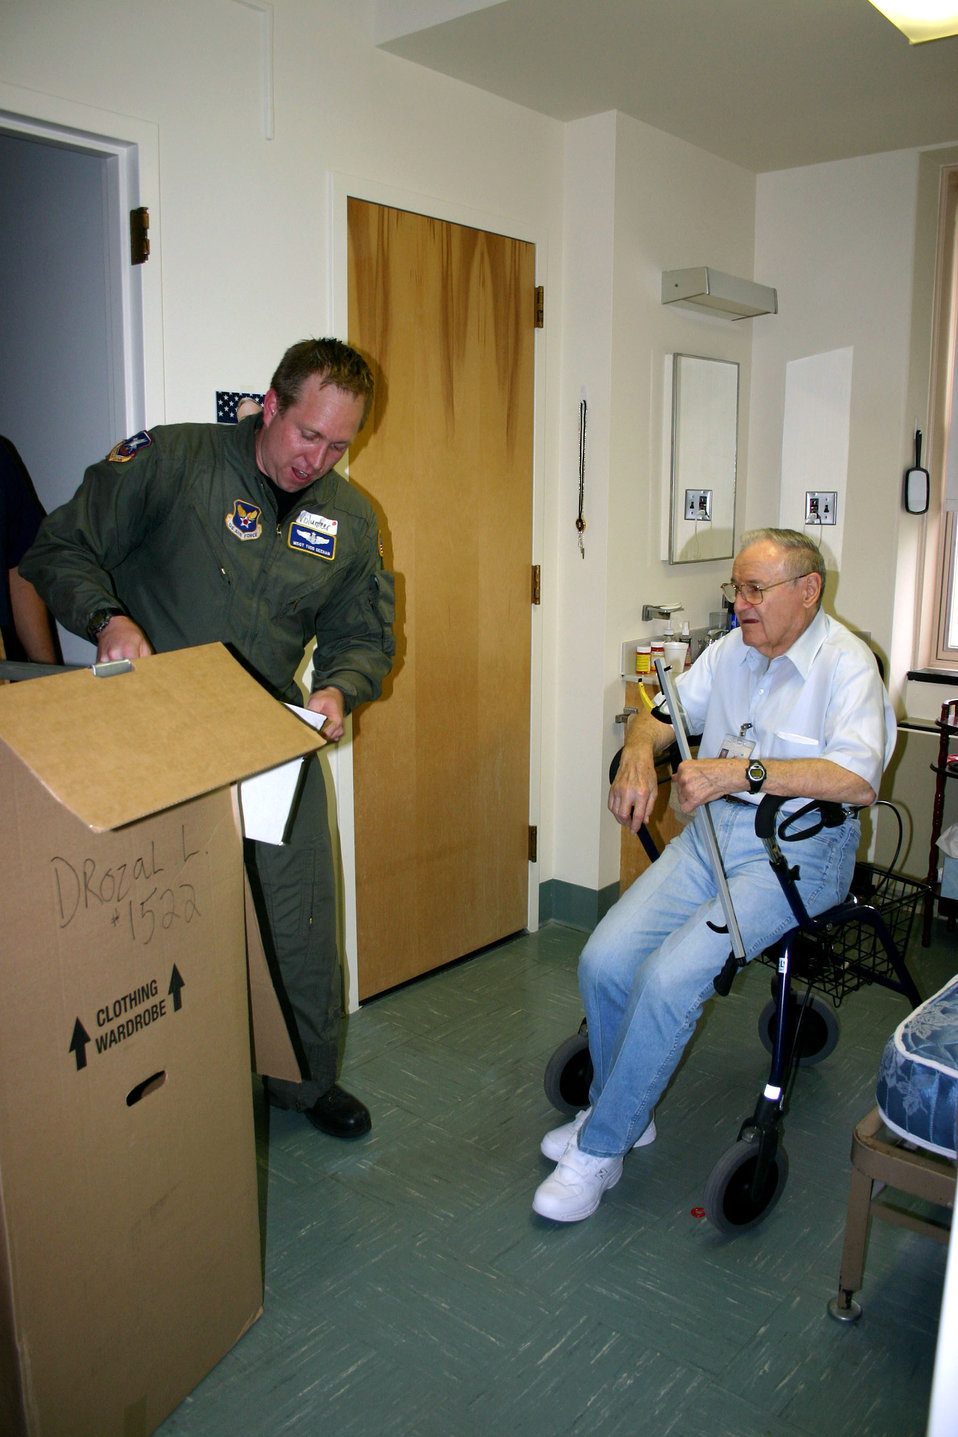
Gulfport evacuees receive helping hand

Master Sgt. Todd Geehan helps Leonard Drozal unpack his belongings at the Armed Forces Retirement Home in Washington, D.C., on Thursday, June 15. Mr. Drozal, a World War II Marine Corps veteran, evacuated here when the retirement home in Gulfport, Miss., was damaged during Hurricane Katrina. Sergeant Geehan is assigned to the Air Force Intelligence Analysis Agency.